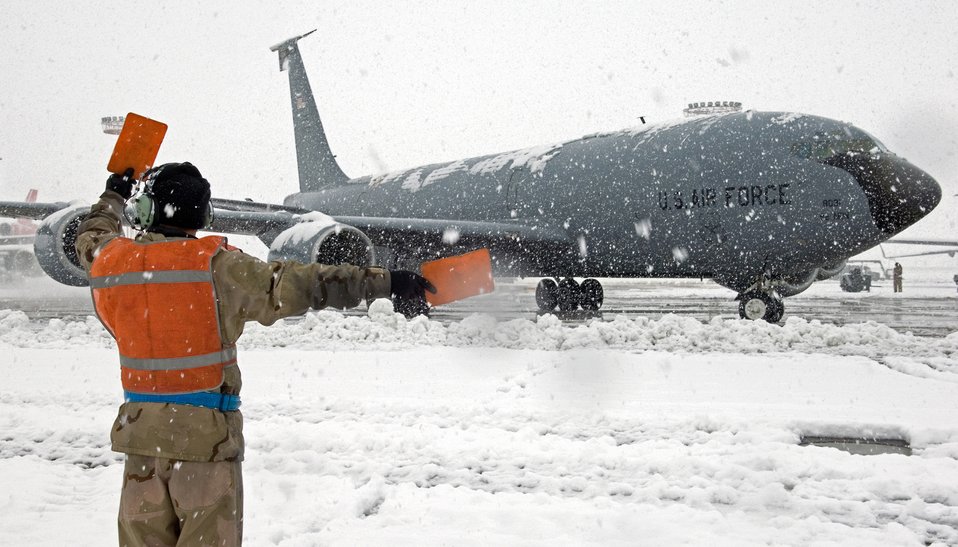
Nov. 12 airpower summary

Staff Sgt. Manuel Garibay directs an Air Force KC-135 Stratotanker out for a refueling mission at Manas Air Base, Kyrgyzstan. On Nov. 11, aerial refueling crews flew 44 sorties and off-loaded approximately 2.6 million pounds of fuel to 233 receiving aircraft. Sergeant Garibay is a maintainer with the 376th Air Expeditionary Wing.